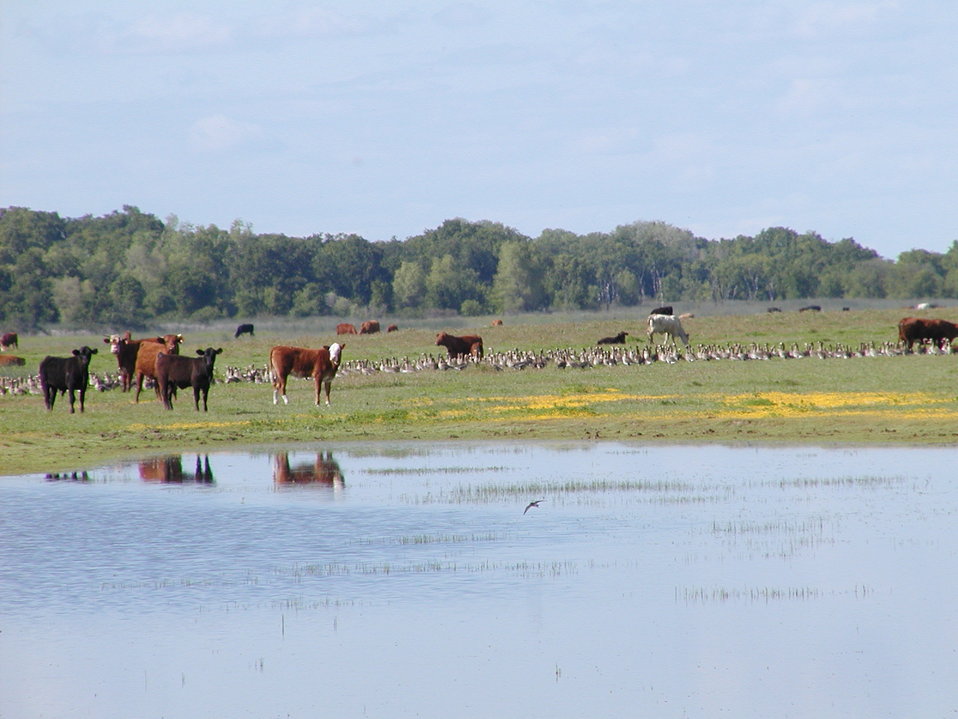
Cattle Grazing and Wild Geese at Vernal Pool

Cattle Grazing-Wild Geese-Vernal Pool - Llano Seco Ranch Apr 23 2003 Joe